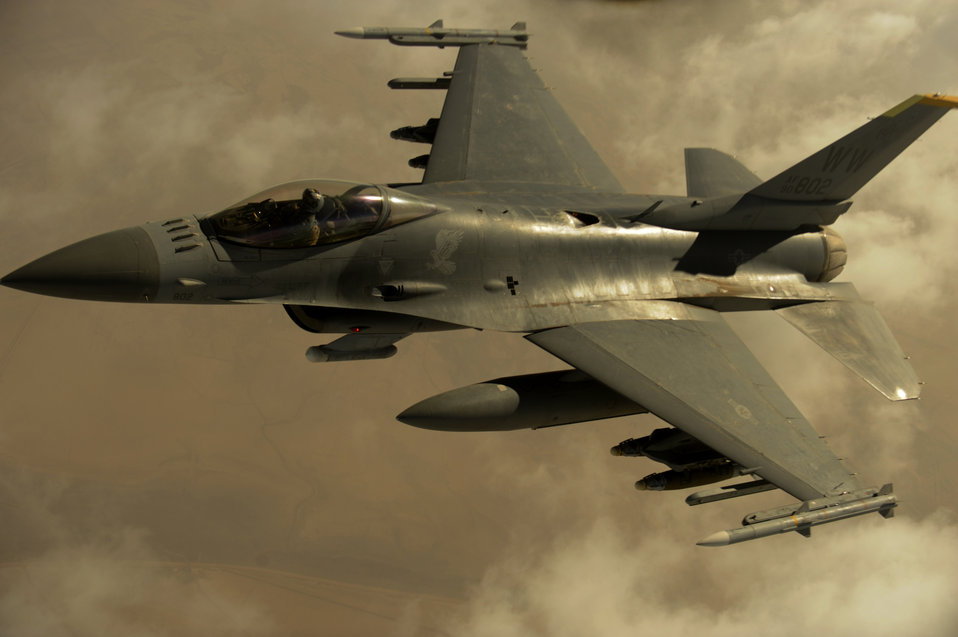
Airpower summary for Feb. 19, 2009

An Air Force F-16 Fighting Falcon conducts close-air support operations over Iraq Feb. 17 in support of Operation Iraqi Freedom.